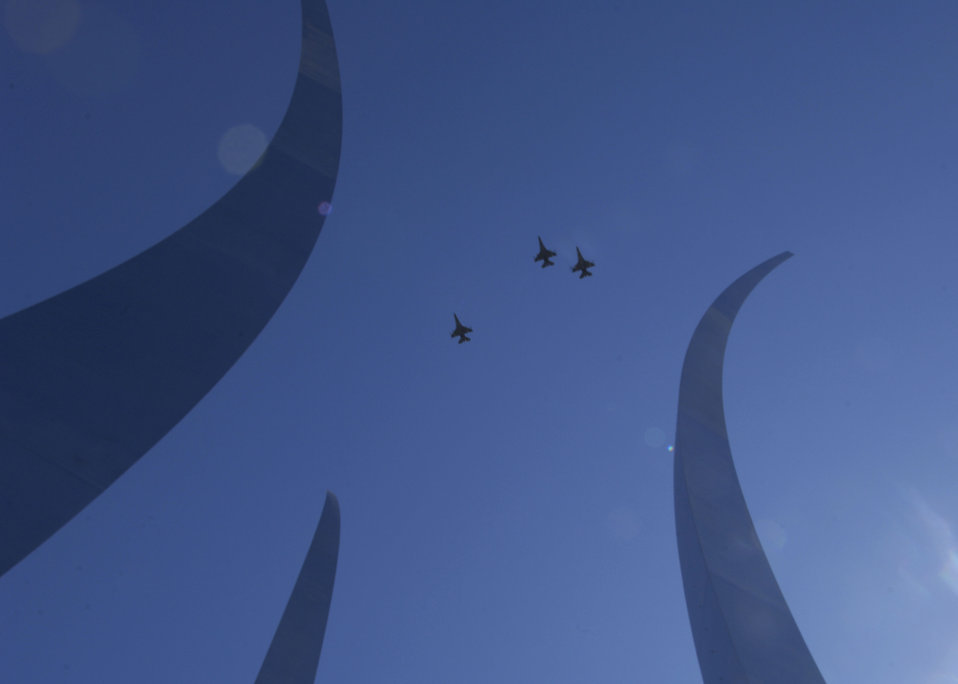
Wreath Ceremony

The Air Force Thunderbirds flew over the new Air Force Memorial in the